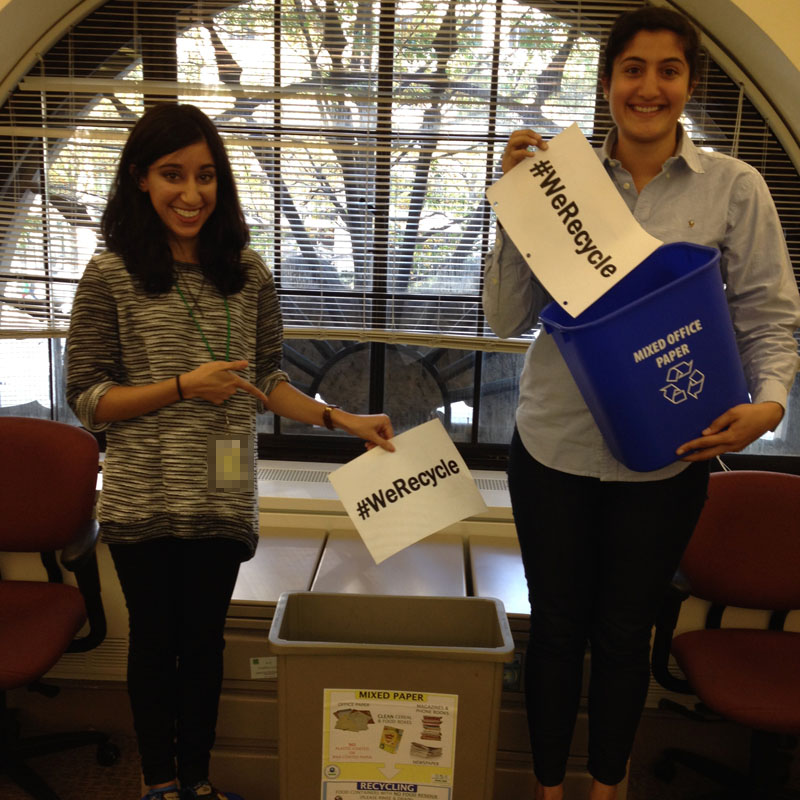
EPA Employees Harsharon and Yasmeen Recycle

At EPA, #WeRecycle. Learn how you can too: www2.epa.gov/recycle